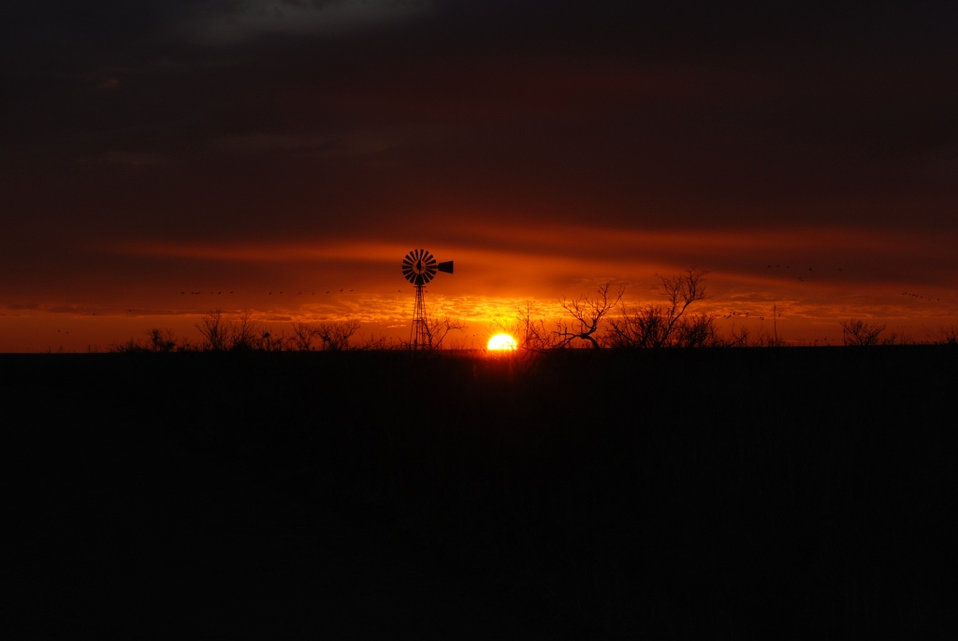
windmill at sunset

Muleshoe National Wildlife Refuge, TX